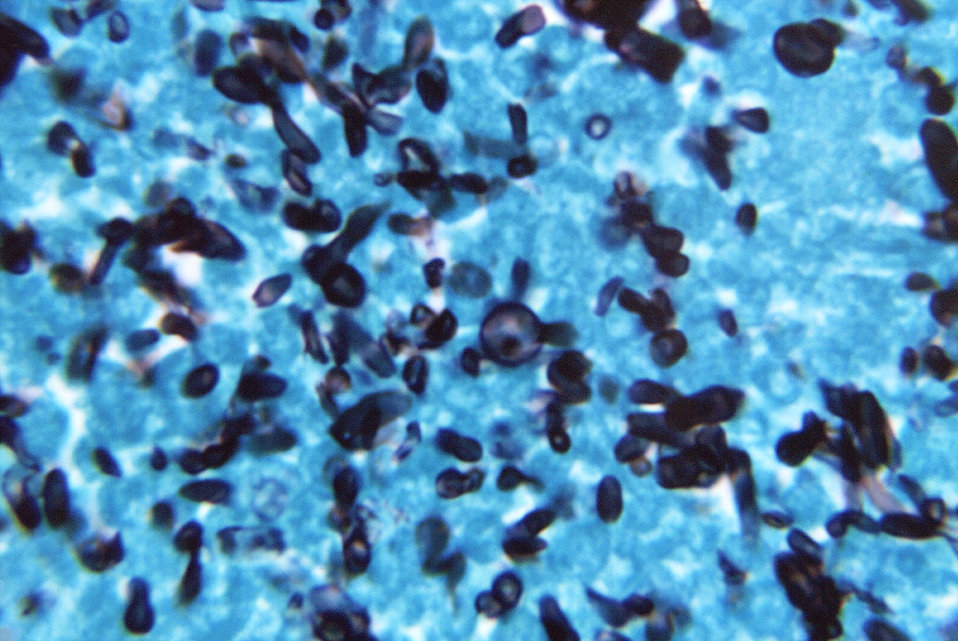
Magnified 375X, this photomicrograph revealed some of the histopathologic features exhibited in a murine, i.e., mouse, tissue specimen, which was infected with what was determined to be Sporotrichum schenkii fungal organisms.